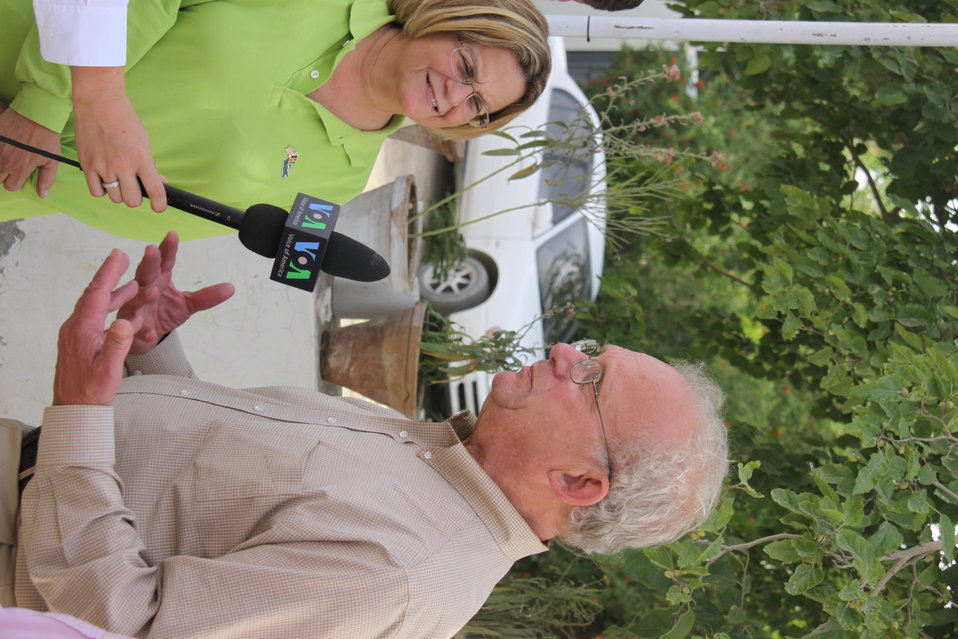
Meeting with Local Leaders in Kandahar